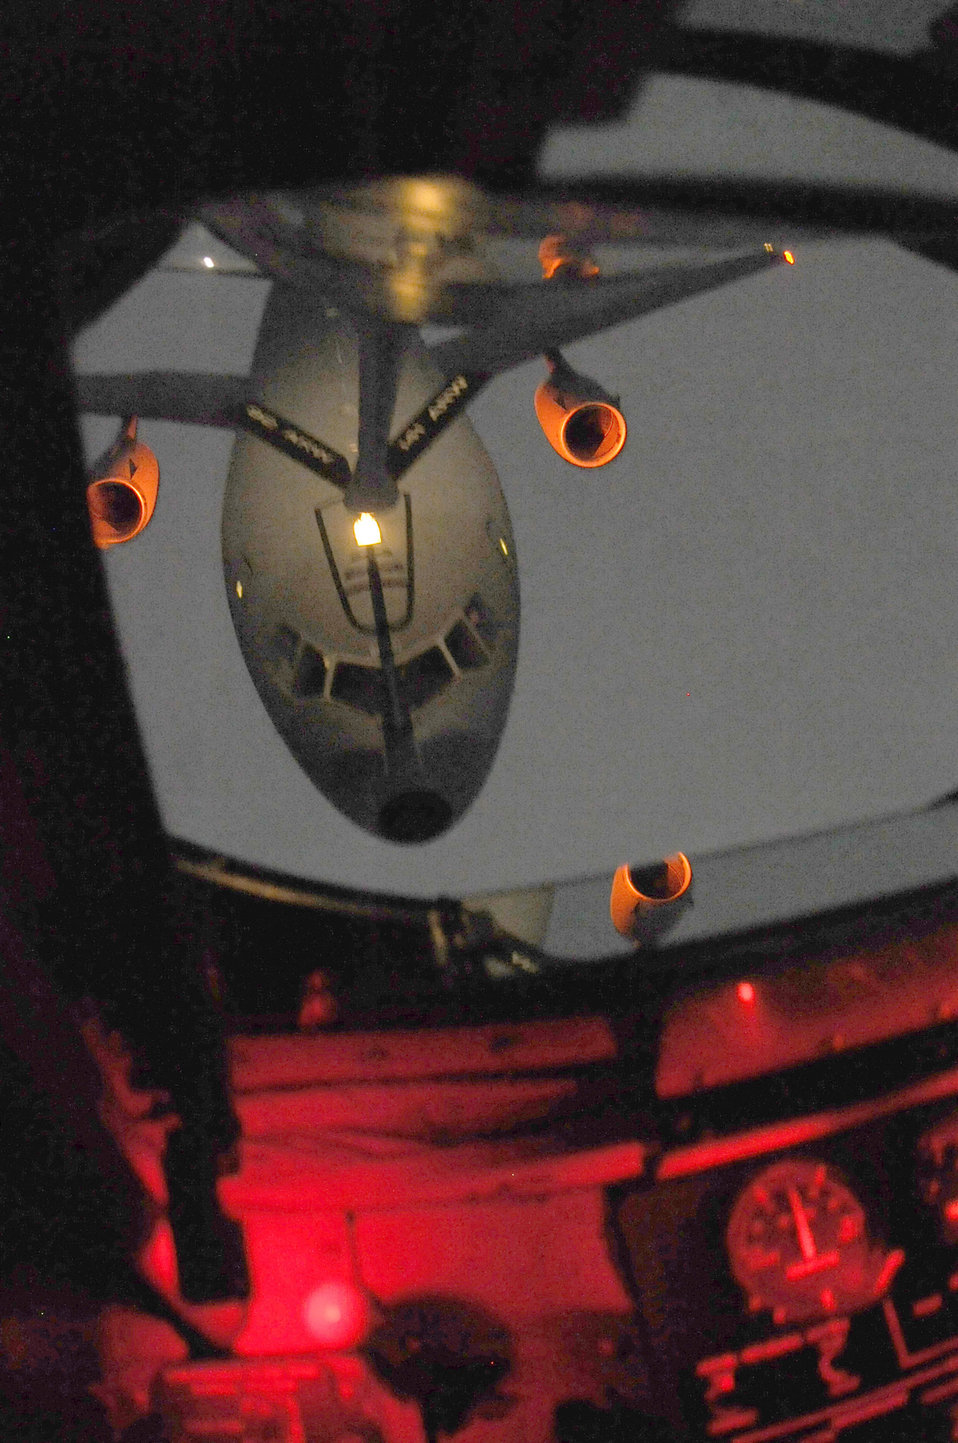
Nighttime gas stop

A KC-10 Extender from Travis Air Force Base, Calif., receives fuel from a KC-135 Stratotanker Nov. 18, 2010, over the Pacific Northwest. The KC-135 is from the 92nd Air Refueling Wing at Fairchild AFB, Wash.